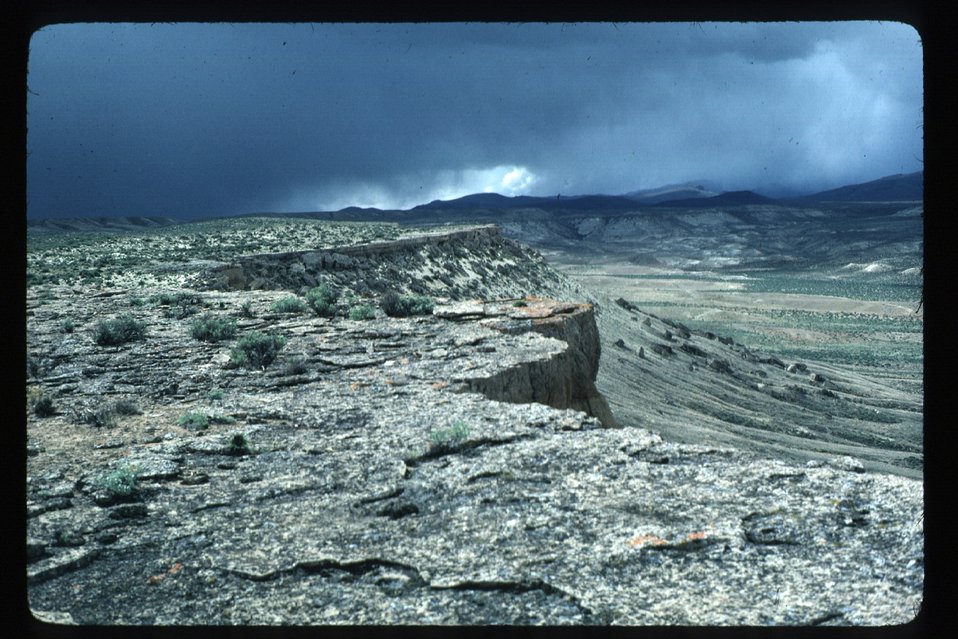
Scenic LSRD Lower Snake River District